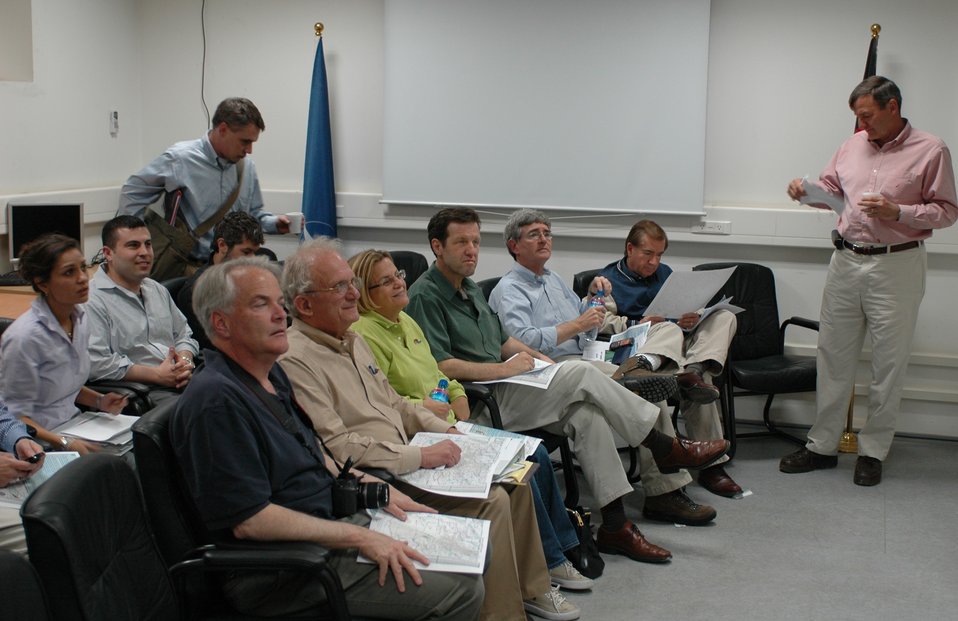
CODEL Berman